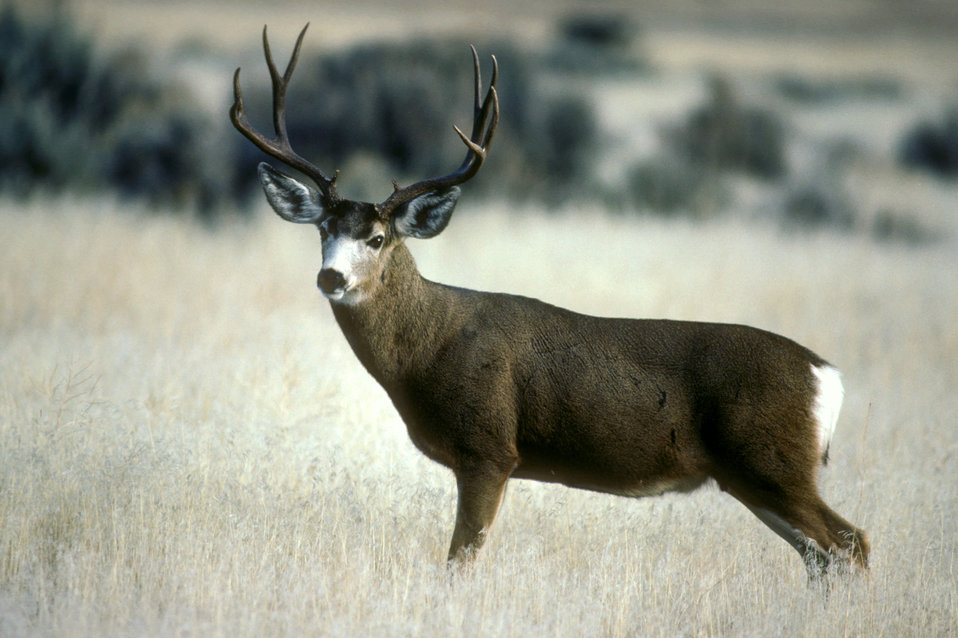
Mule Deer at Lava Beds Monument